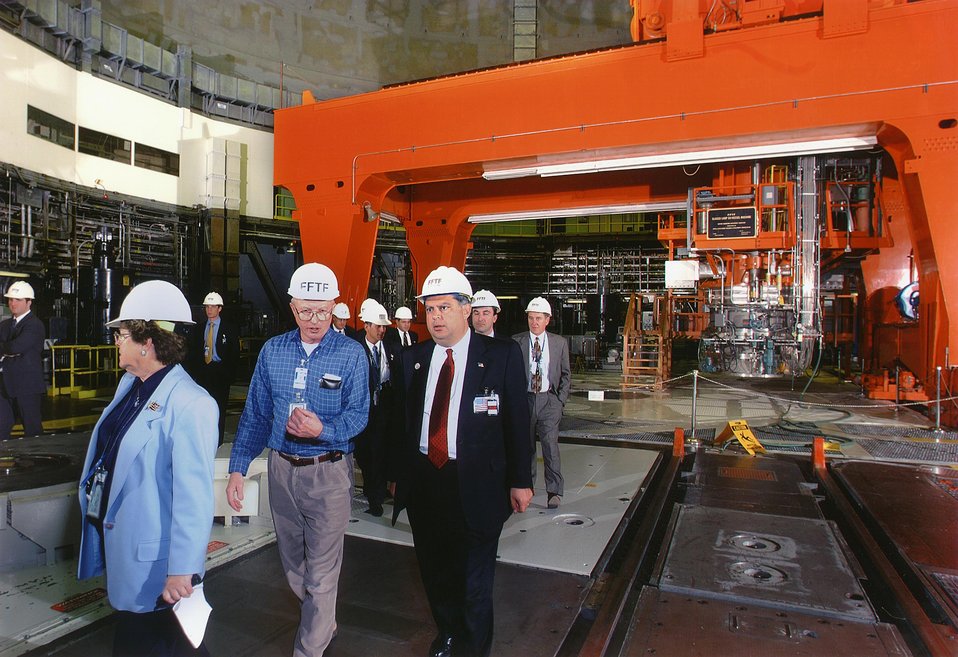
SECRETARY OF ENERGY ABRAHAM VISITING THE FAST FLUX TEST FACILITY.

SECRETARY OF ENERGY ABRAHAM GETS BRIEFING FROM AL FARABEE, DIRECTOR OF THE FAST FLUX TEST FACILITY. AFTER A COMPREHENSIVE REVIEW IT WAS ANNOUNCED ON DECEMBER 19, 2001 THAT THE DEPARTMENT WILL PROCEED WITH THE DEACTIVATION OF THE FACILITY.